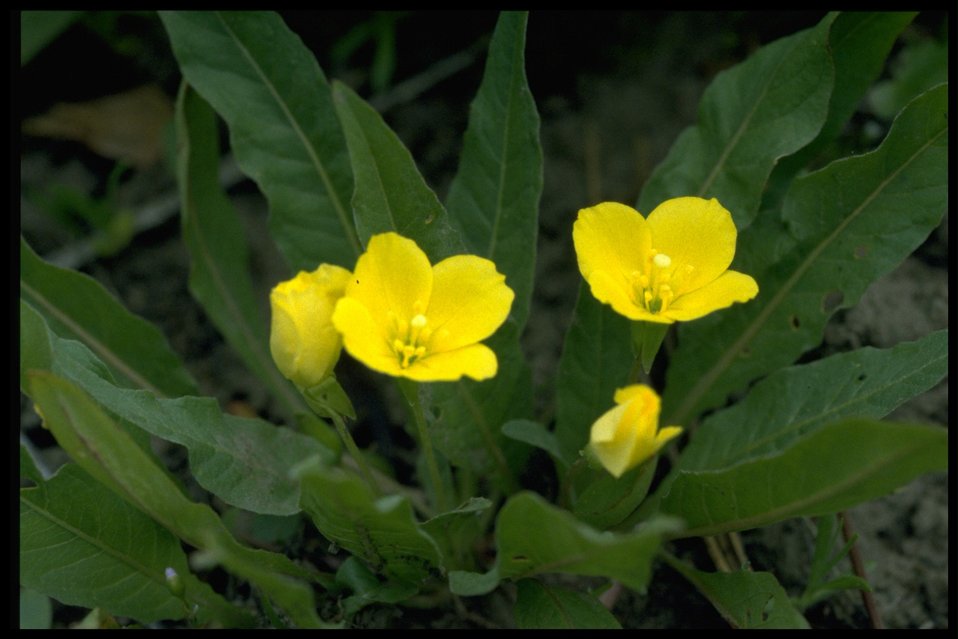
Closeup shot of diffuseflower evening-primerose (Camissonia subacaulis).